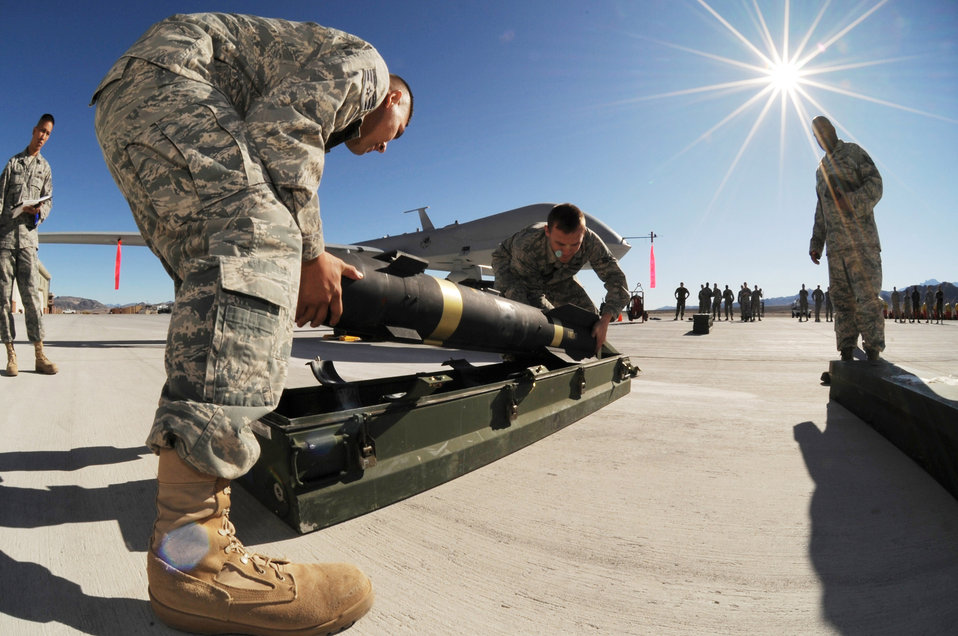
Don't drop

Staff Sgt. Bobby Domanski and Airman 1st Class Aaron Weddington prepare to load a Hellfire missile on an MQ-1B Predator Jan. 16 during a wing weapons load crew competition at Creech Air Force Base, Nev. Both Airmen are assigned to the 432nd Aircraft Maintenance Squadron.